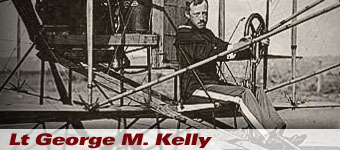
P-38 history spotlight graphic .